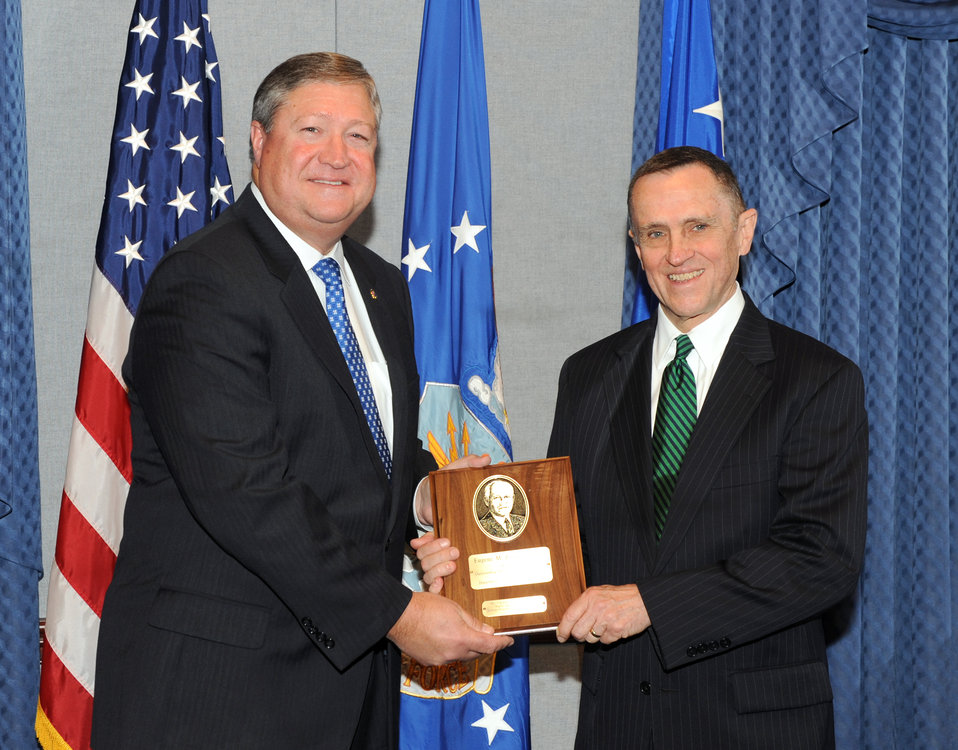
Senior Leader Passing

Secretary of the Air Force Michael Donley presents the 2010 Eugene M. Zuckert Management Award to Charles Henderson during a ceremony in the Pentagon, June 29, 2011.